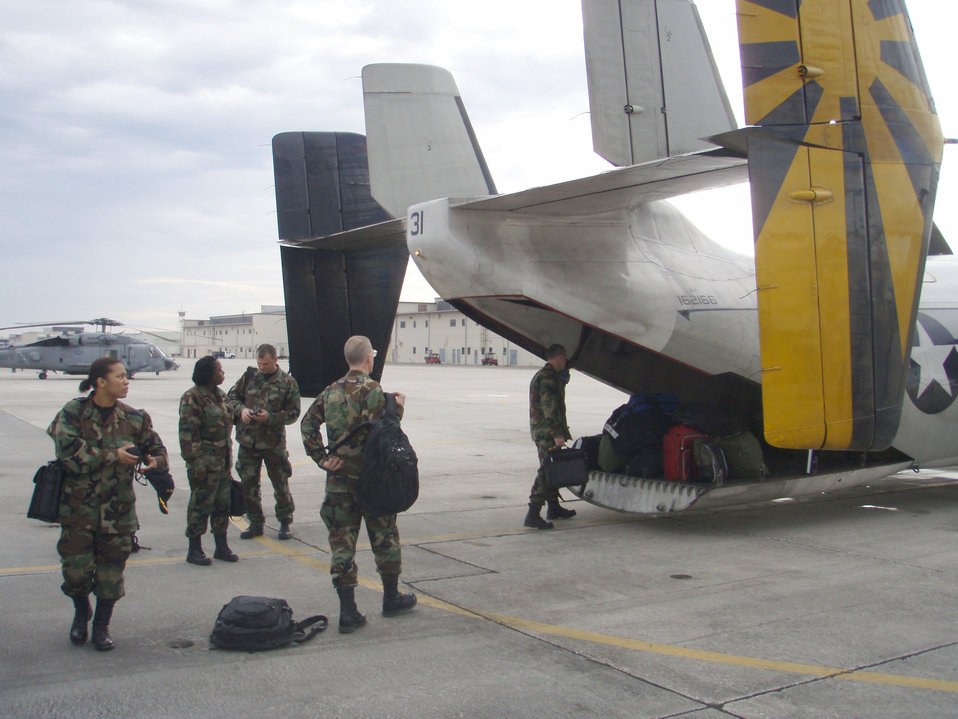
This image depicts United States Public Health Service (USPHS) team of officers who were preparing for their flight to the USS Kearsarge (LHD 3) during Operation Continuing Promise (CP), 2008.